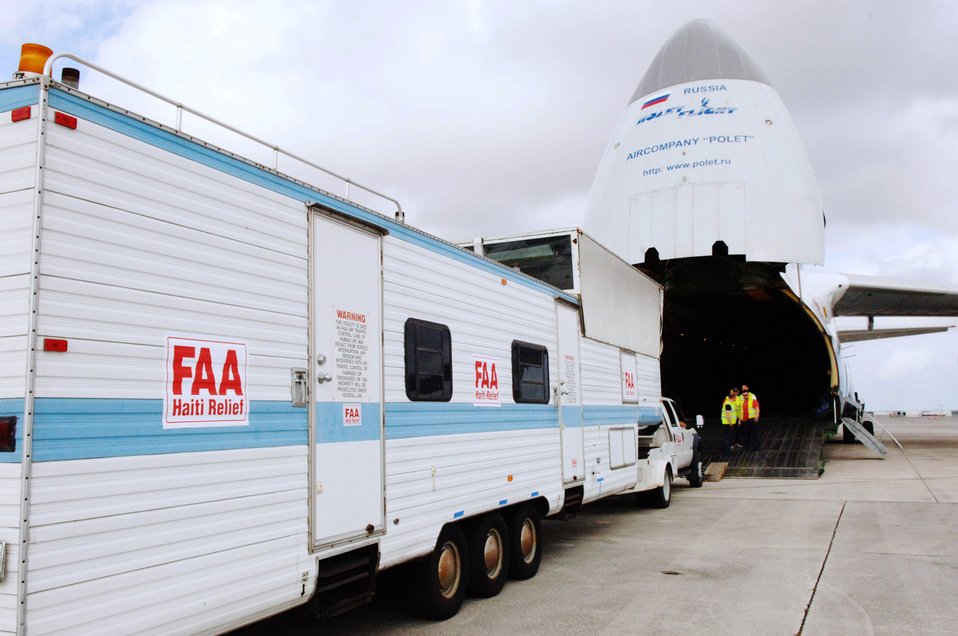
Air Force, FAA use Russian aircraft to move mobile air traffic control tower

A mobile air traffic control tower is loaded onto a Russian Antonov An-124 cargo plane at Homestead Air Reserve Base, Fla., Jan. 21, 2010. The mobile air traffic control tower will increase the efficiency of aid being delivered to earthquake victims in Haiti.